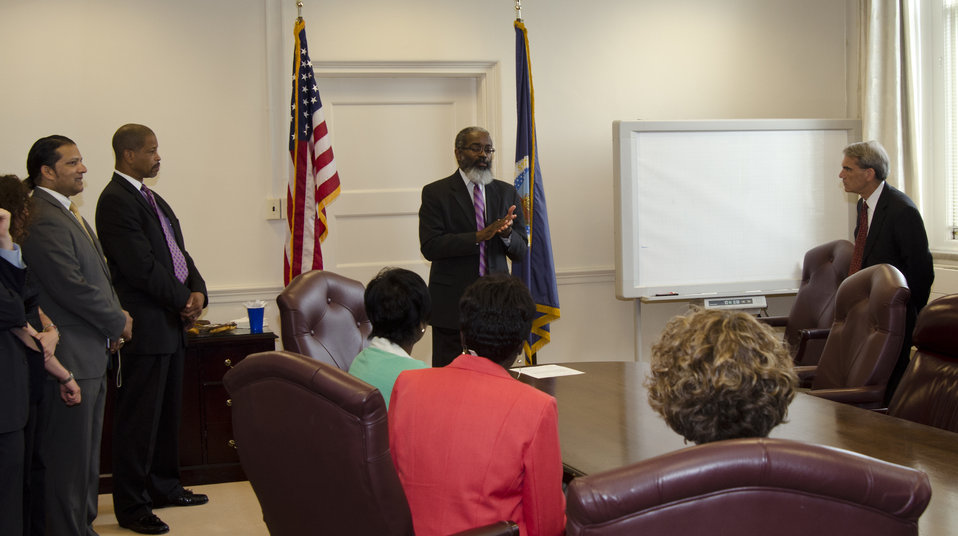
Dr. Greg Parnham makes remarks after being sworn in as the U.S. Department of Agriculture (USDA) Assistant Secretary for Administration at USDA in Washington, D.C. on Thursday, Jun. 6, 2013.